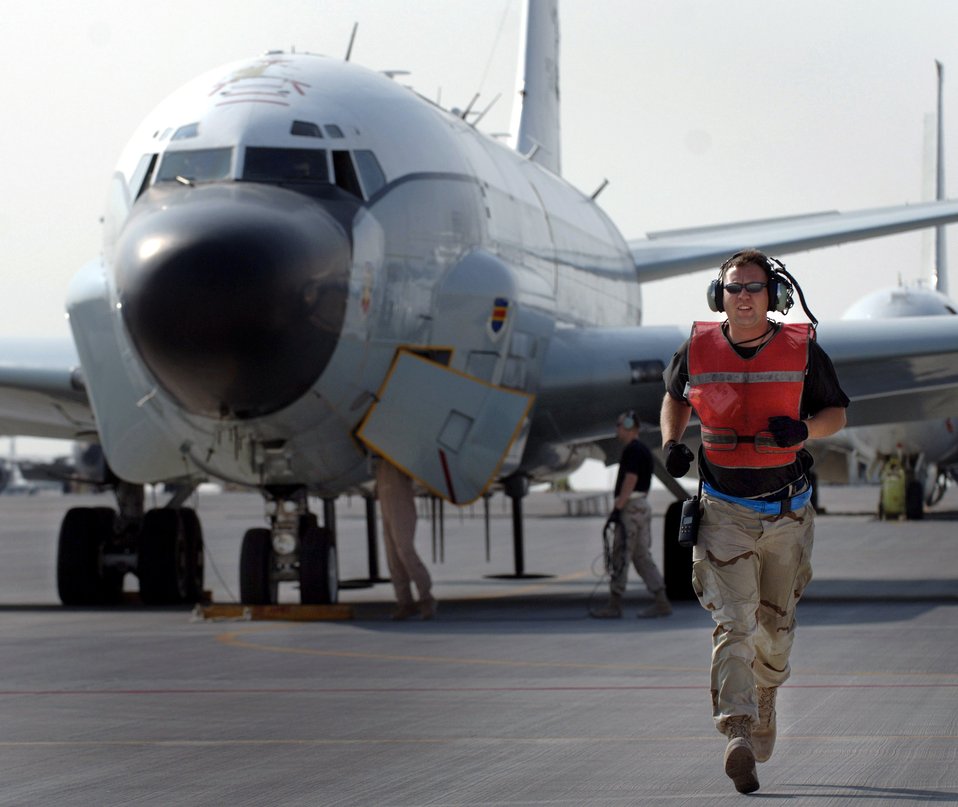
Reconnaissance aircraft, team reach milestone

Staff Sgt. James Parker runs to the middle of the taxiway to martial an RC-135 Rivet Joint reconnaissance aircraft that is departing for a mission over Southwest Asia. Sergeant Parker is a crew chief deployed from the 55th Aircraft Maintenance Squadron, Offutt Air Force Base, Neb.